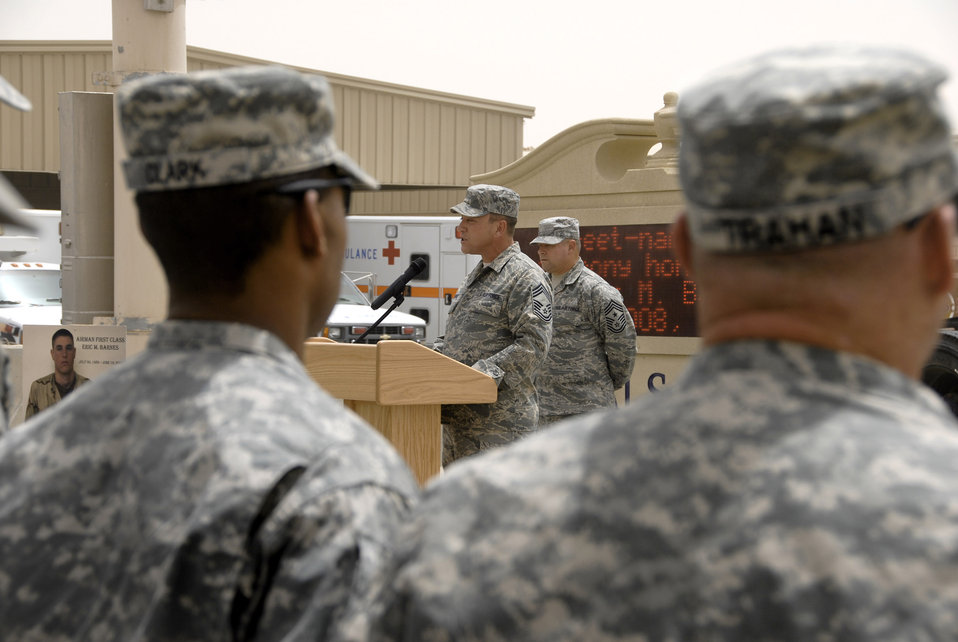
In his honor: Street named for Airmen killed in action

Chief Master Sgt. Richard Bunce speaks during a street dedication ceremony June 10 in Southwest Asia. The ceremony is a tribute to Airman 1st Class Eric Barnes, 20, of Lorain, Ohio, died June 10, 2007, as a result of an improved explosive device attack on an Air Force convoy about 100 miles south of Baghdad, Iraq. He was deployed from the 90th Logistics Readiness Squadron at F.E. Warren Air Force Base, Wyo. Chief Bunce is the 100th Logistics Readiness Squadron chief enlisted manager.